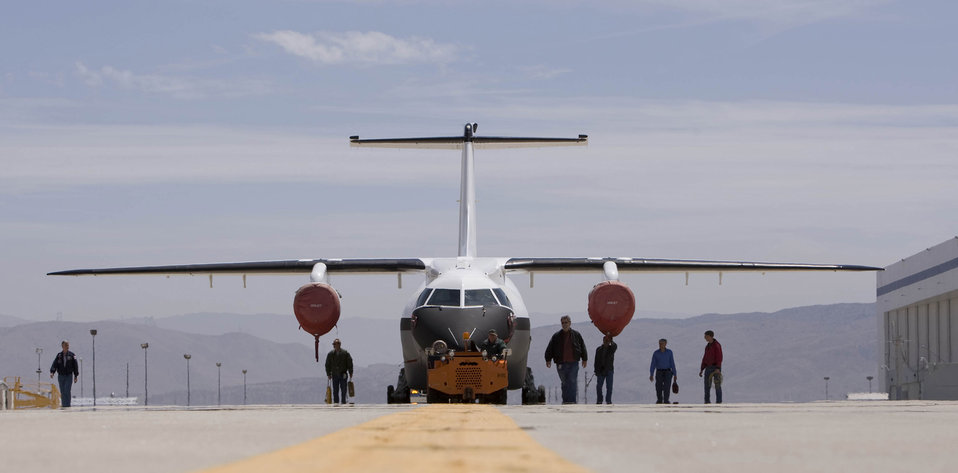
Advanced composite cargo aircraft makes first flight

The Advanced Composite Cargo Aircraft rolls out of a hangar in May at Lockheed Martin's Skunk Works plant in Palmdale, Calif. The ACCA is a modified Dornier 328J aircraft. The fuselage aft of the crew station and the vertical tail were removed and replaced with completely new structural designs made of advanced composite materials fabricated using out-of-autoclave curing. Air Force Research Laboratory officials at Wright-Patterson Air Force Base, Ohio, oversee the ACCA program.